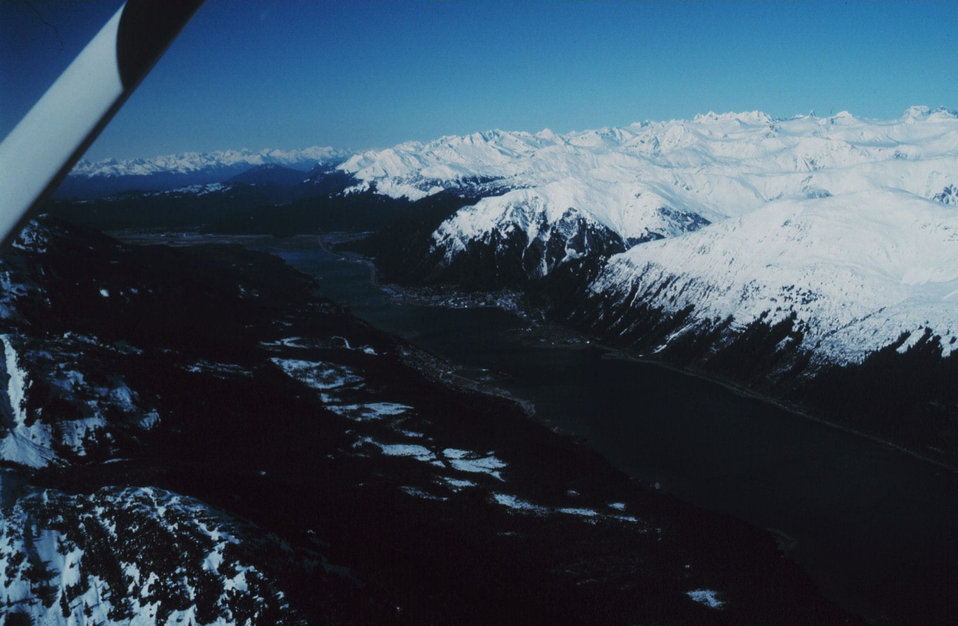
Gastineau Channel